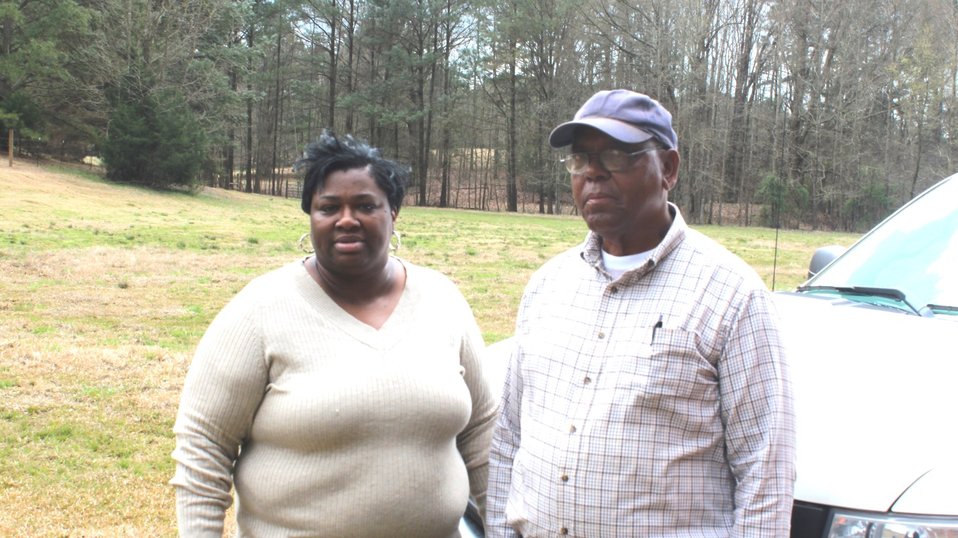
Photo1

NRCS Supervisory District Conservationist Priscilla Williamson (left) worked with Charles McLaurin (right) to remove invasive grasses and install cross fencing, improving water quality downstream.